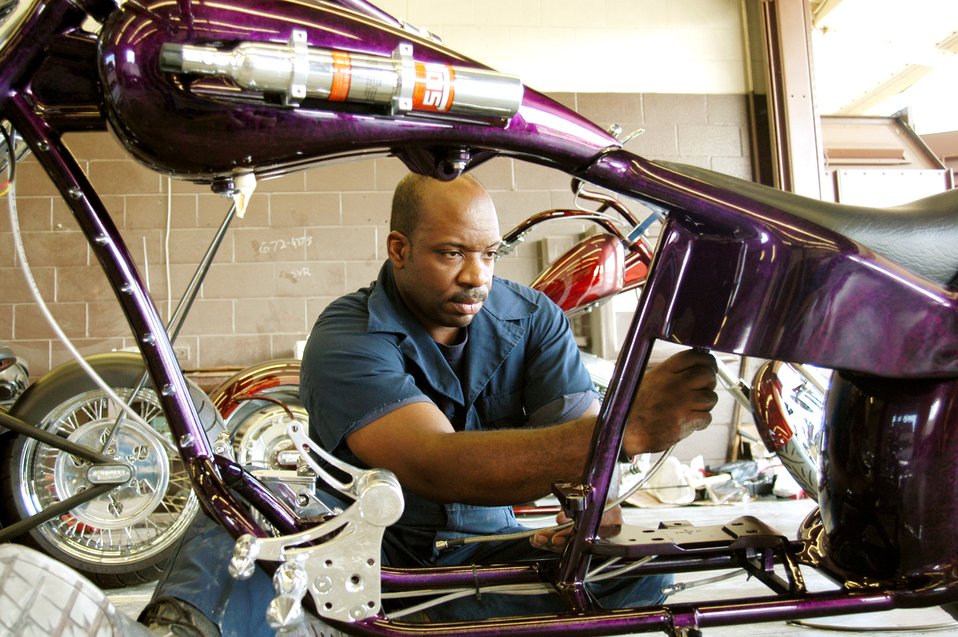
Sergeant's love of steel, paint creates rolling artwork

HICKAM AIR FORCE BASE, Hawaii -- Tech. Sgt. Greg Price attaches an oil line to a pro street chopper he is building to show in the 3rd Annual Choppers-Only Show in Honolulu. This is the 14th bike he has built in the past four years. He is a C-40B aircraft crew chief with the 15th Airlift Maintenance Squadron here.